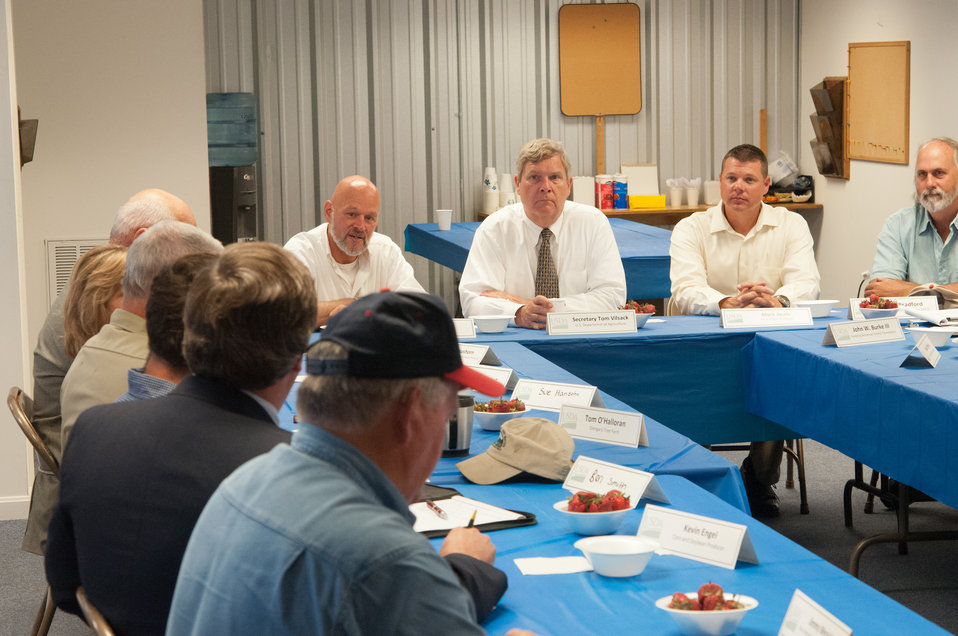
Agriculture Secretary Tom Vilsack held a round table discussion with local producers to listen to the producers concerns and answer their questions at Blue Ridge Produce in Elkwood, VA on Thursday, May 30, 2013. Blue Ridge Produce is a local food hub aggregating Virginia-grown fruits and vegetables for sale to wholesale customers in the Capitol region and strives to build a value-based relationship with Virginia growers of all sizes by handling the marketing and logistics to get their produce from farm to customer.